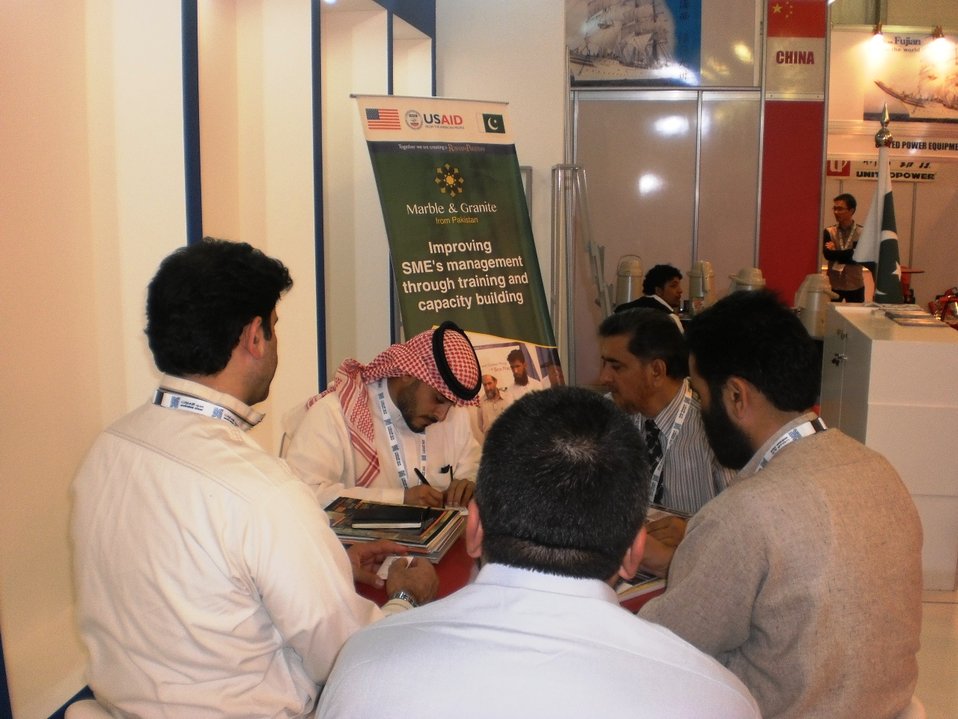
USAID Firms Project Marble and Granite sector participates in the BIG 5, largest construction show of Saudi Arabia

Direct sales worth USD 10,000 were made on marble products, during the exhibition. Furthermore, an order of Pakistani marble tiles worth USD 15,000 was also placed by a Turkish visitor